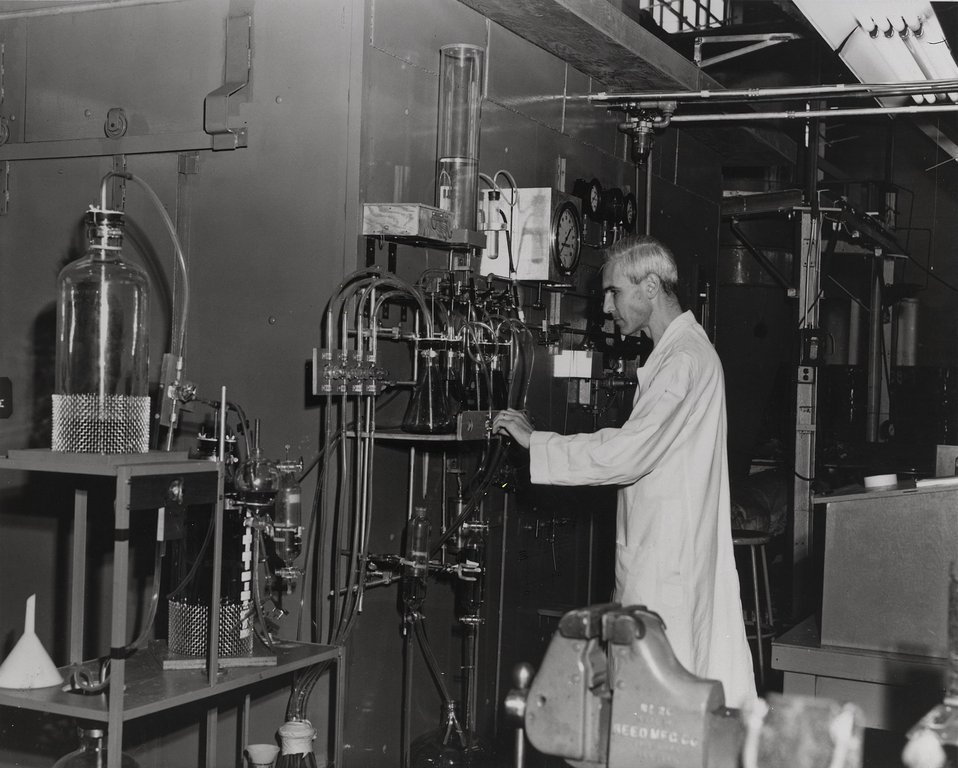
Project engineer at Monroeville, Pa., laboratory of Bituminous Coal Research, Inc., checks samples of gas produced from coal in batch autoclaves (inside safety cubicle) during bench-scale tests of BCR's two-stage, super-pressure coal-gasification process.